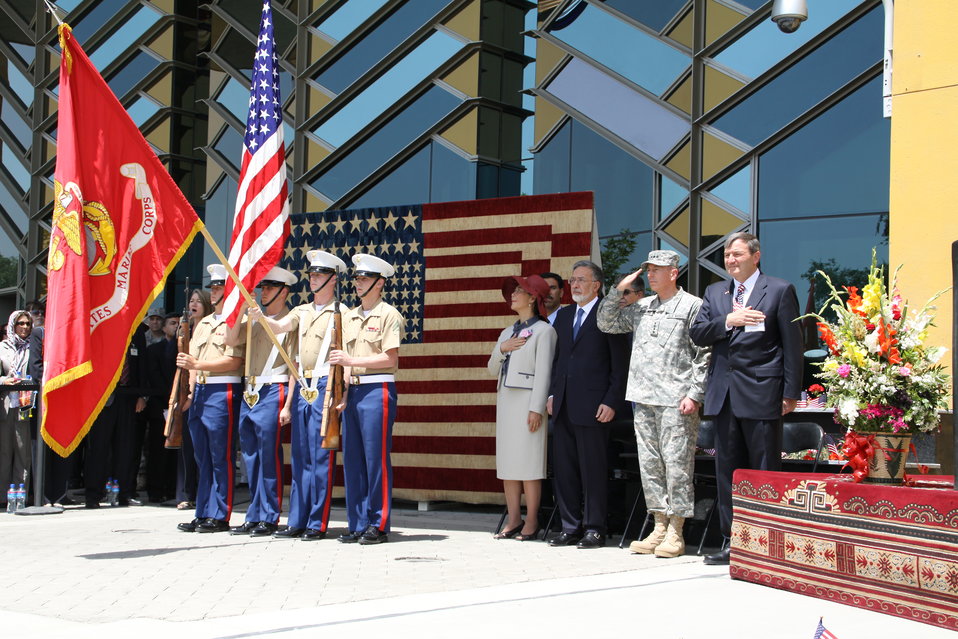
Kabul Official July 4th Celebration